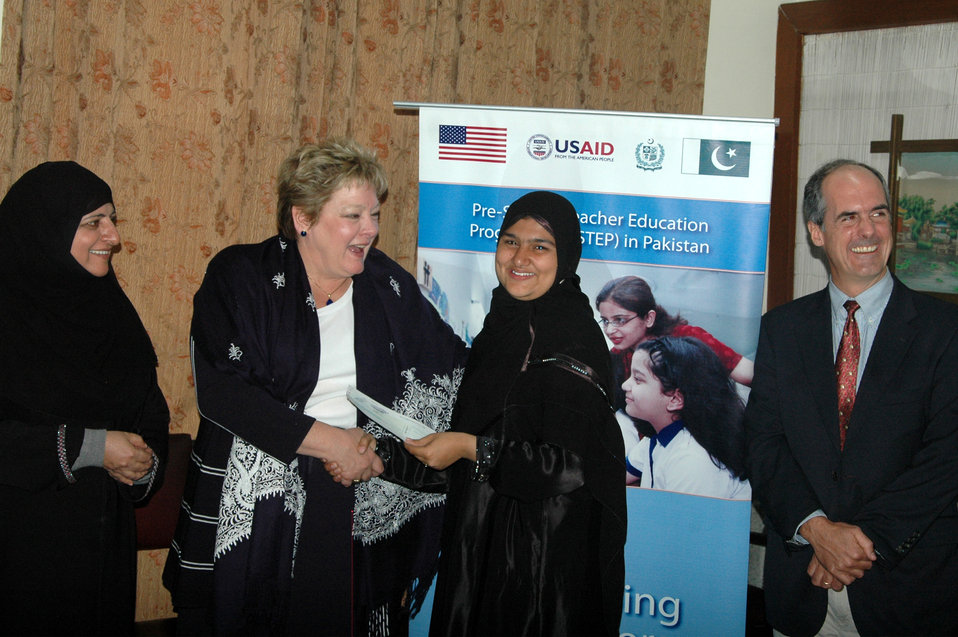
Pre-Service Teachers Education Program (Pre-STEP)

Lahore, February 21, 2012 - Deputy Mission Director USAID Pakistan Ms. Karen Freeman distributing scholarships to B. Ed (Hons.) students at IER, University of the Punjab.